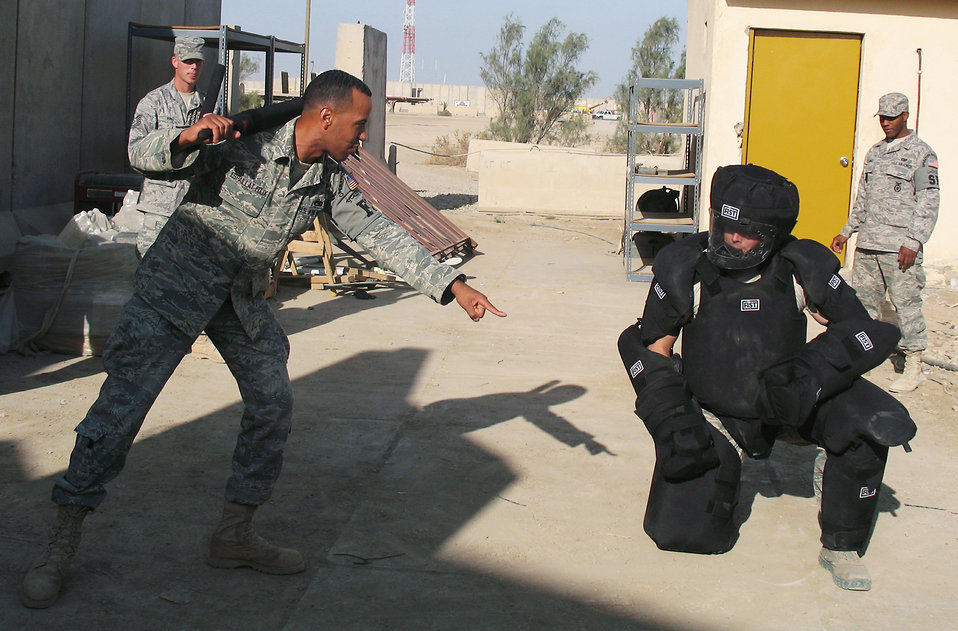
Force protection Airmen learn to use another tool

Tech. Sgt. Geovanni Espaillat Felix directs the